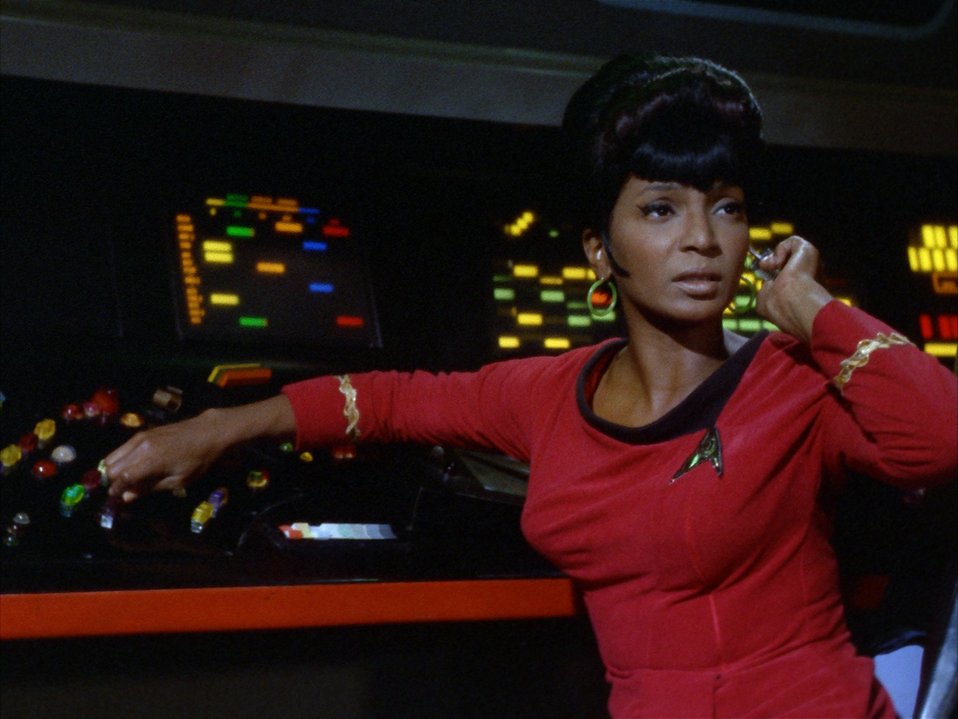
Nichelle Nichols as Lt. Uhura on the original Star Trek did much to recruit African-Americans into the NASA space program